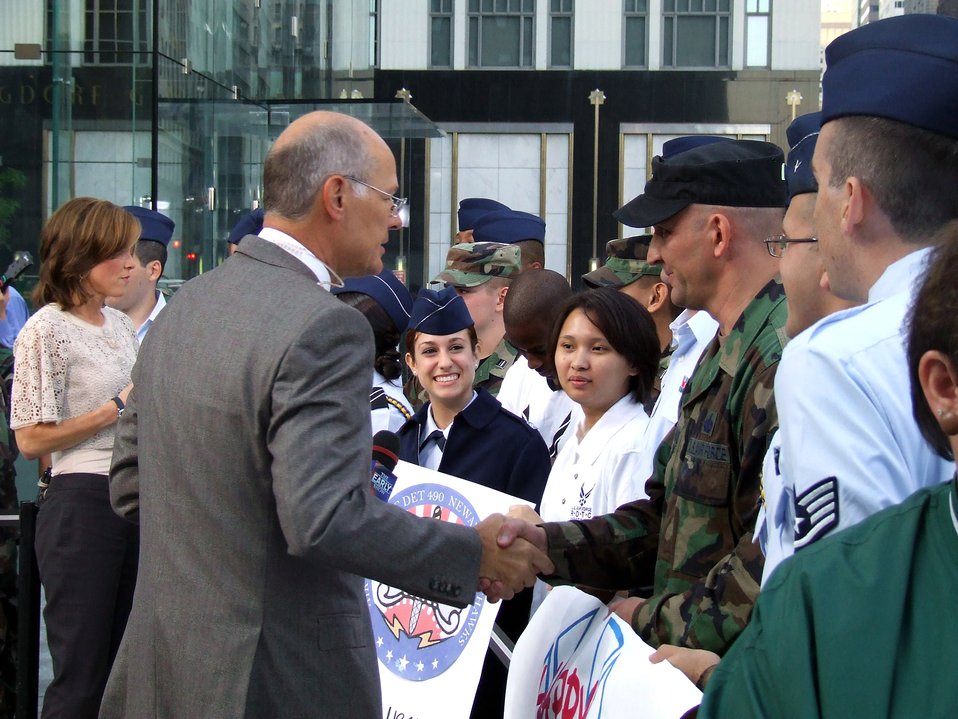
CBS' 'The Early Show' recognizes AF 60th anniversary

Anchor Harry Smith from CBS'